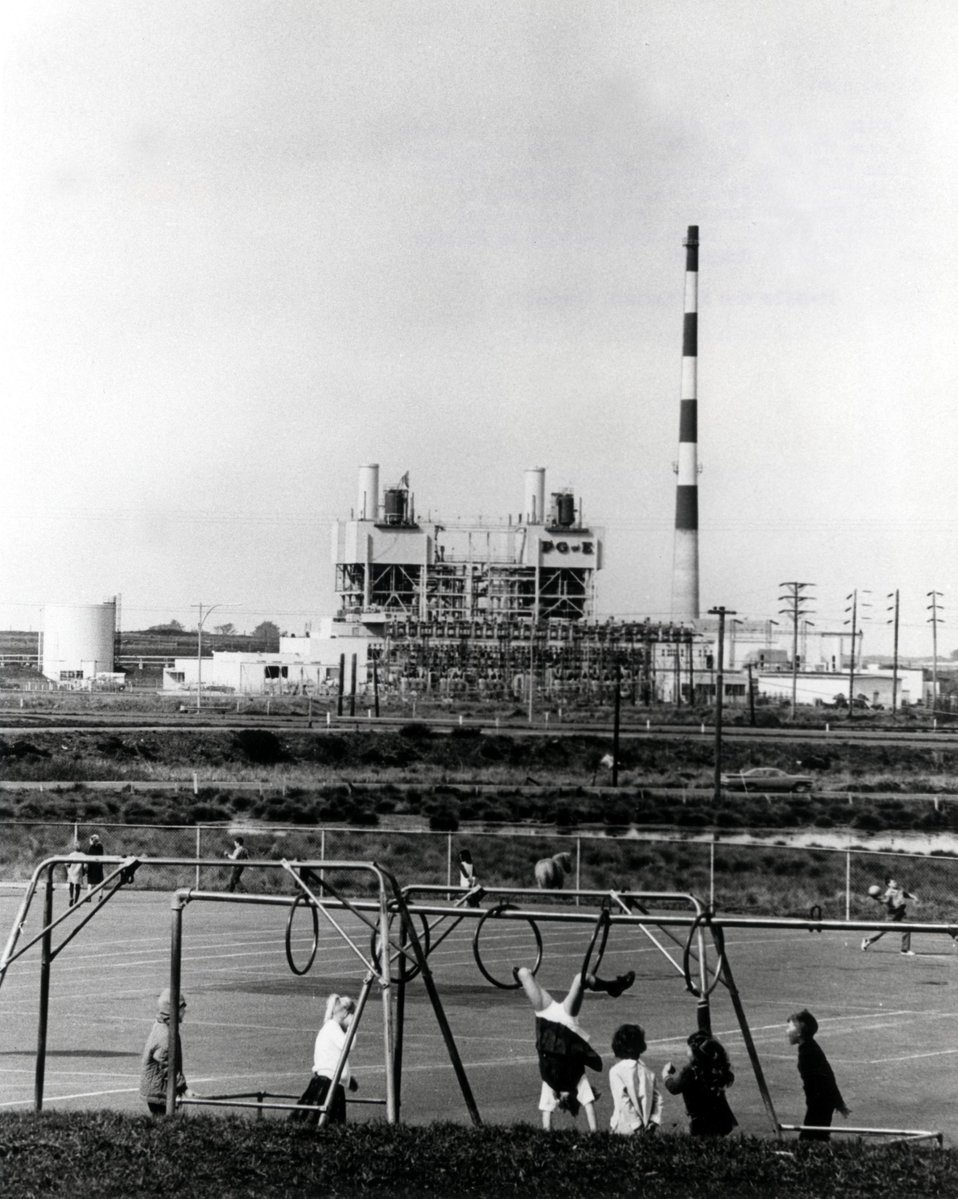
Humbolt Bay Nuclear Plant